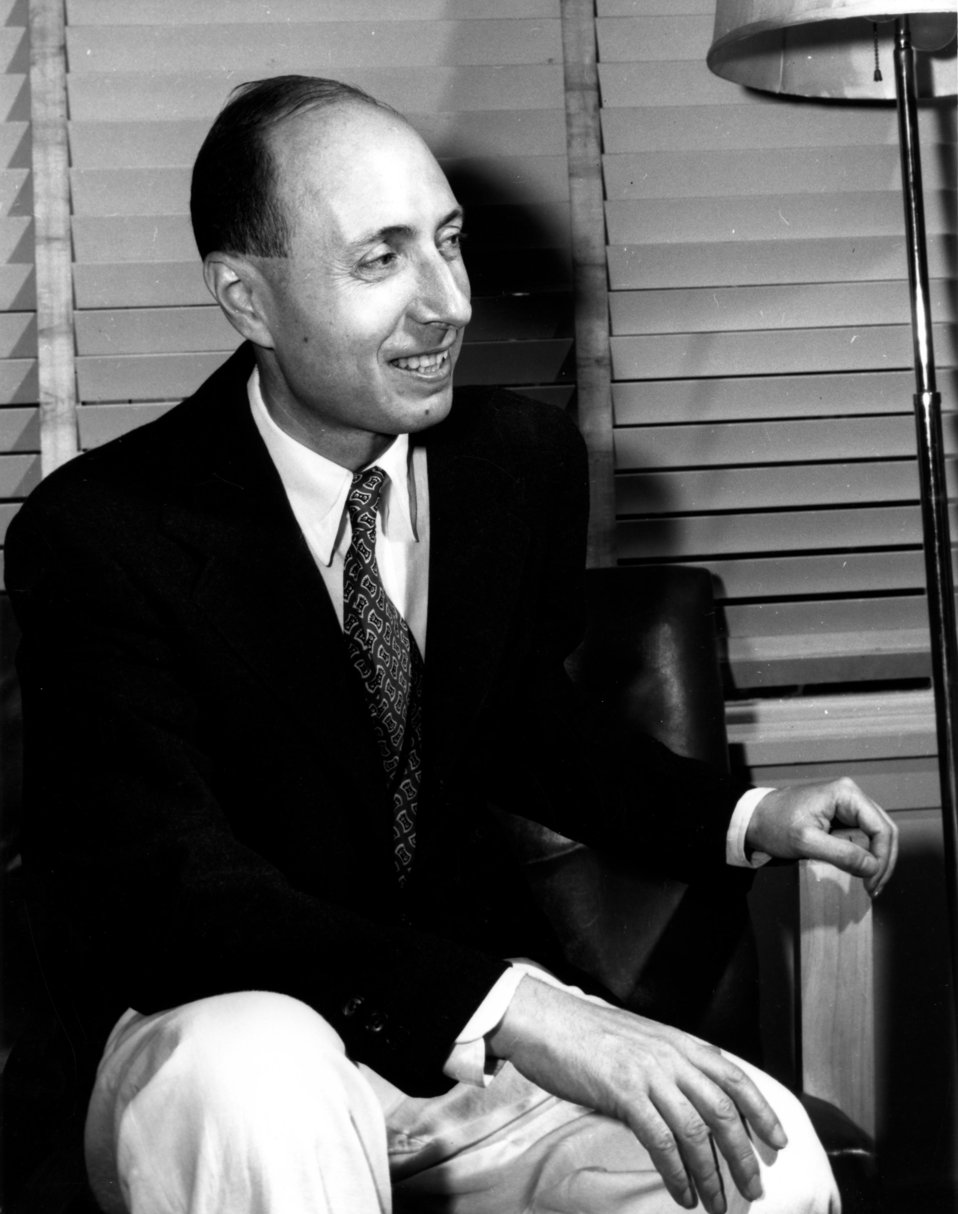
Notable persons at Oak Ridge